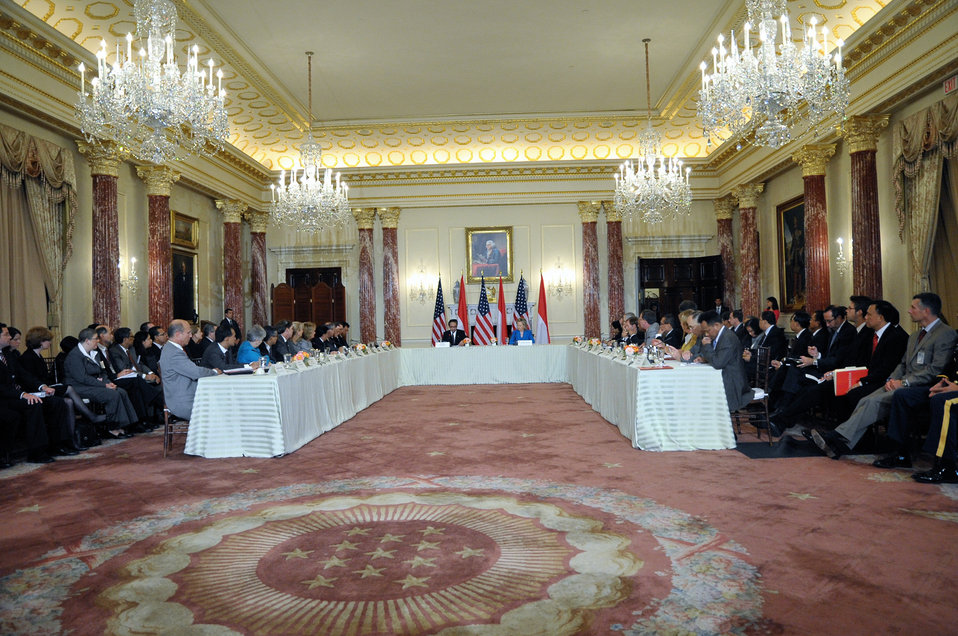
Secretary Clinton Chairs the U.S.-Indonesian Joint Commission Meeting With Indonesian Foreign Minister Natalegawa

U.S. Secretary of State Hillary Rodham Clinton chairs the first U.S.-Indonesian Joint Commission meeting with Indonesian Foreign Minister Marty Natalegawa at the U.S. Department of State in Washington, D.C., on September 17, 2010.